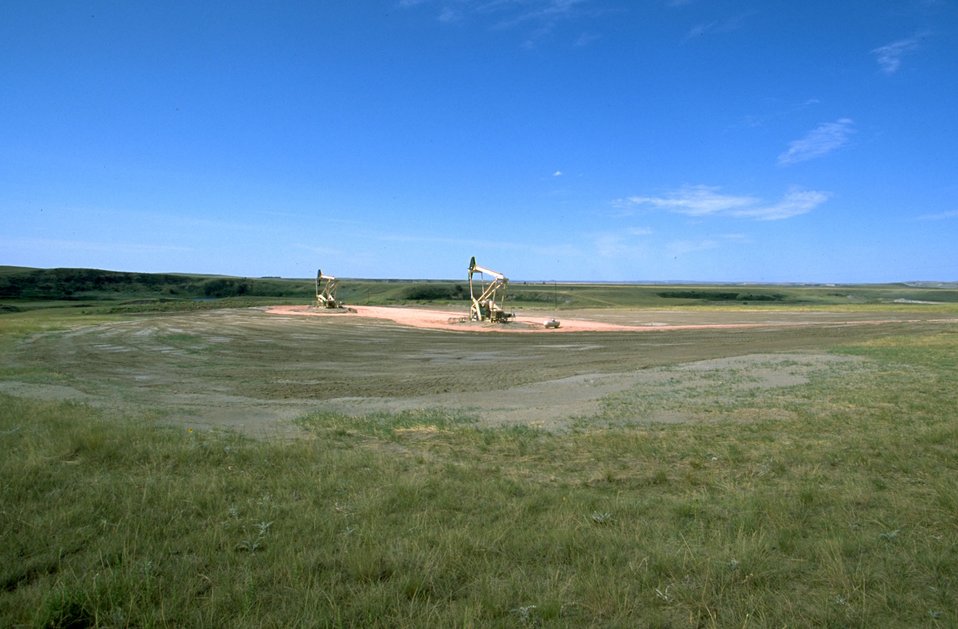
Two partially reclaimed well pads with production taking place